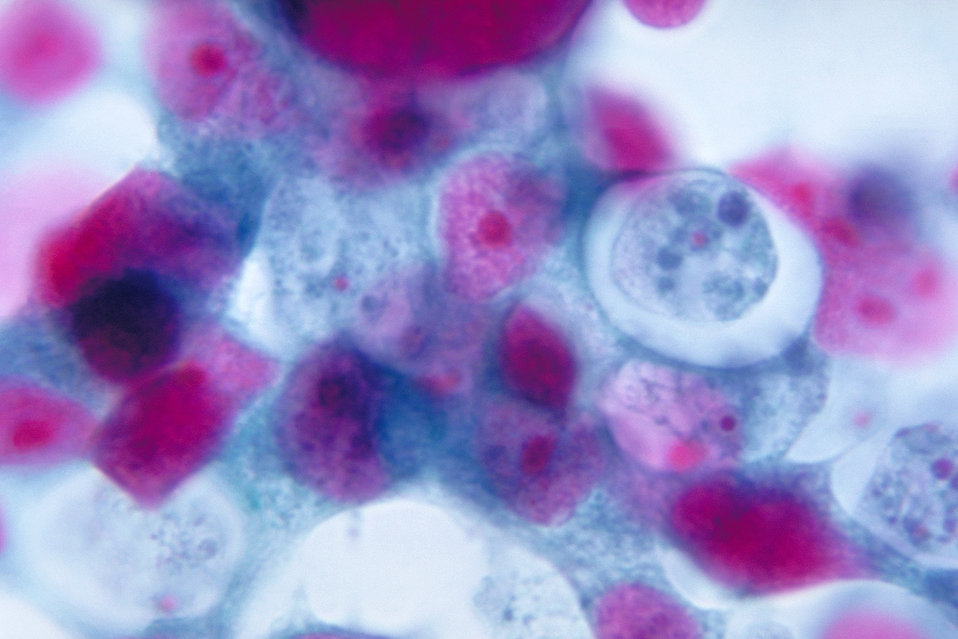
Naegleria gruberi in amebic meningoencephalitis. Parasite, ameba, brain.